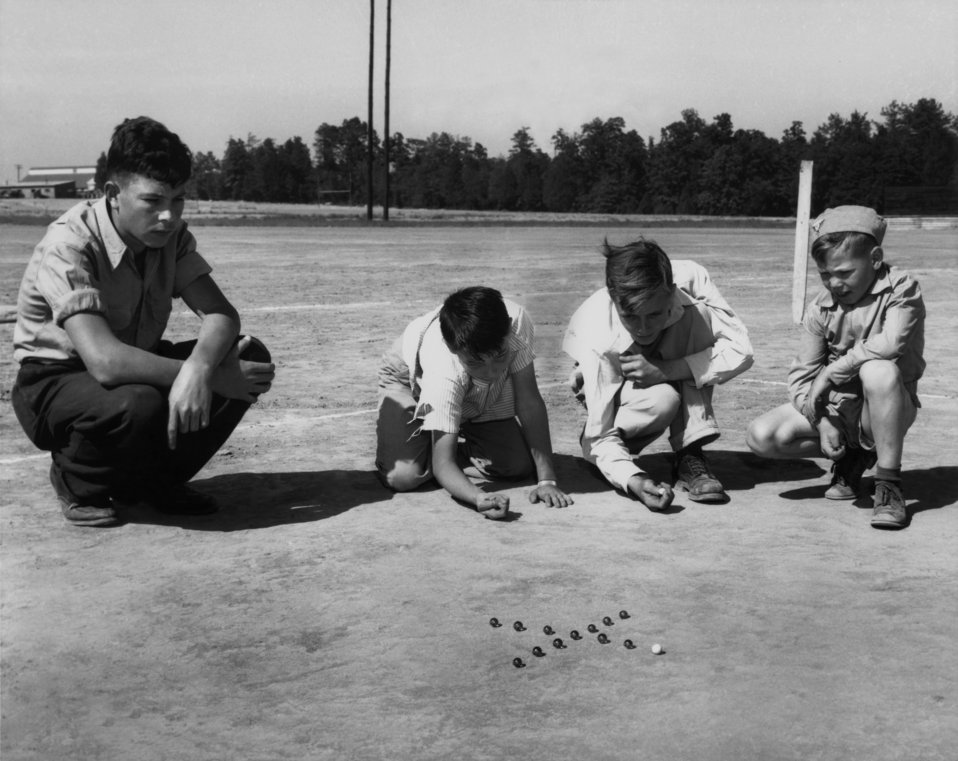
Marbles Oak Ridge

PRO576-4 DOE photo by Ed Westcott

Tennessee 5/16/45